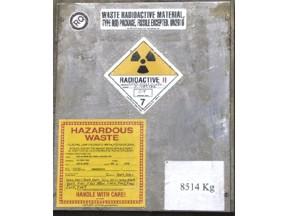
TRUPACT-II packages at WIPP

Labels on the outside of arriving TRUPACT-II shipping packages at the Waste Isolation Pilot Plant in Carlsbad, NM. The labels tell waste handlers what kind of waste is contained inside. The labels also include the type of package, radioactive hazard, whether there is hazardous waste inside, and the actual weight of the loaded TRUPACT-II.